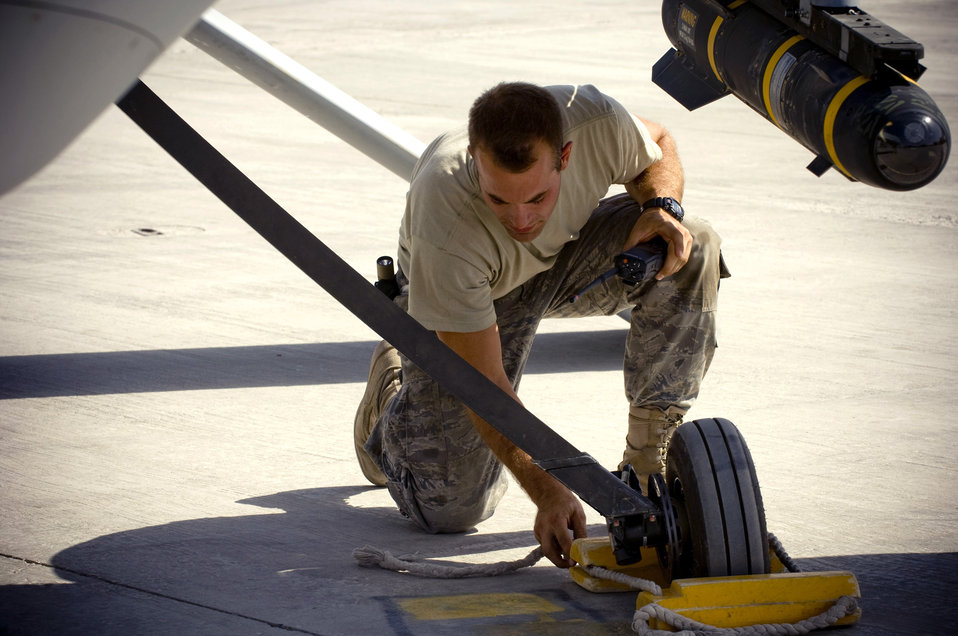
Predators on patrol in Afghanistan

Airman 1st Class Justin Cole removes the chalks of an MQ-1 Predator Oct. 26 at a base in southern Afghanistan. Despite the unmanned, remote nature of the aircraft, they are still treated with all the same precautions and considerations of the larger, manned airframes. Airman Cole is a 62nd Expeditionary Reconnaissance Squadron crew chief deployed from Creech Air Force Base, Nev. He hails from Orange Park, Fla.